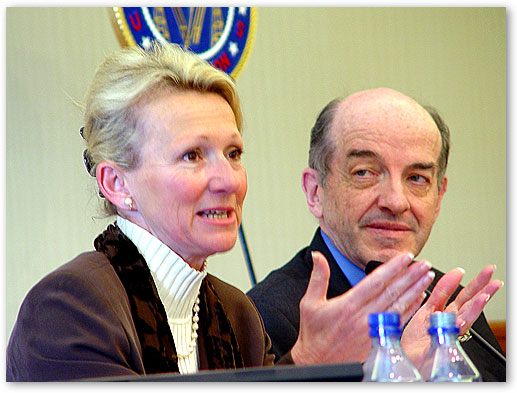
Commissioners Deborah Tate and Michael Copps.